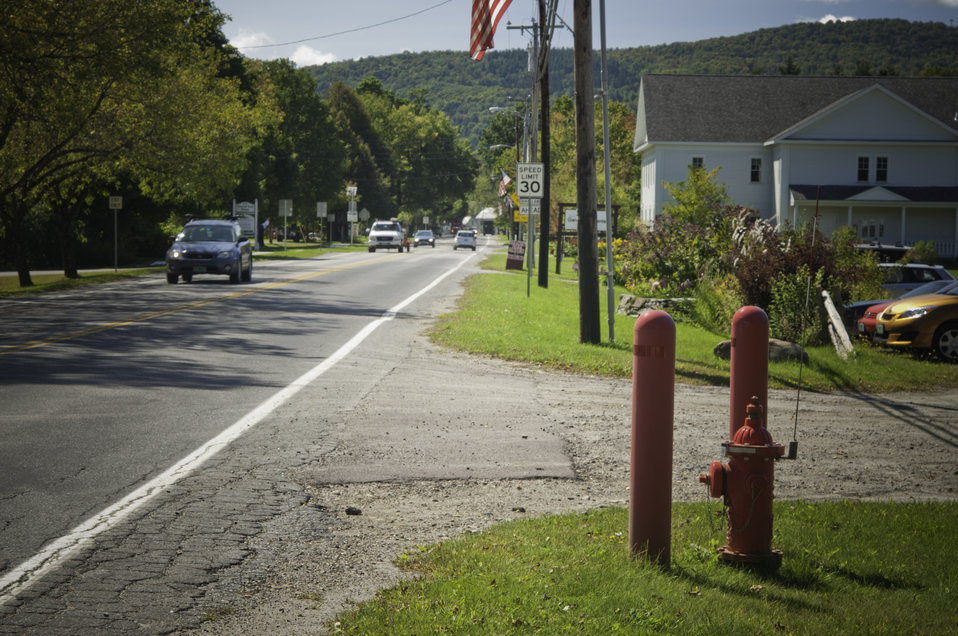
The town of Waitsfield, Vermont was able to secure funding for a safe, reliable drinking water supply and reduced fire insurance rates with a U.S. Department of Agriculture (USDA) Rural Development (RD) Water and Environmental Program (WEP) grant on Sep. 17, 2013.